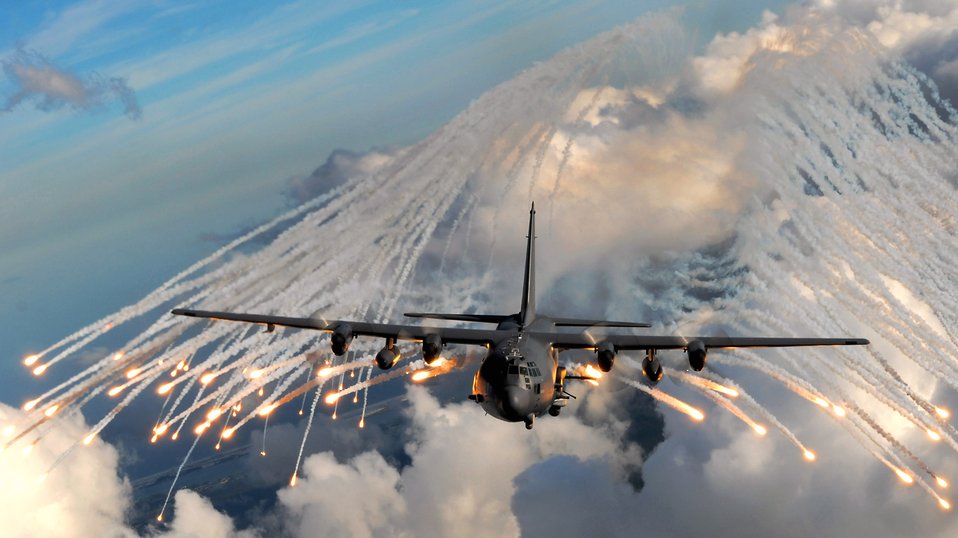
Fooling the enemy

An AC-130U gunship jettisons flares Aug. 20 over an area near Hurlburt Field, Fla. The flares are a countermeasure for heat-seeking missiles that may be fired at the aircraft during real world missions. The aircraft is from the 4th Special Operations Squadron.